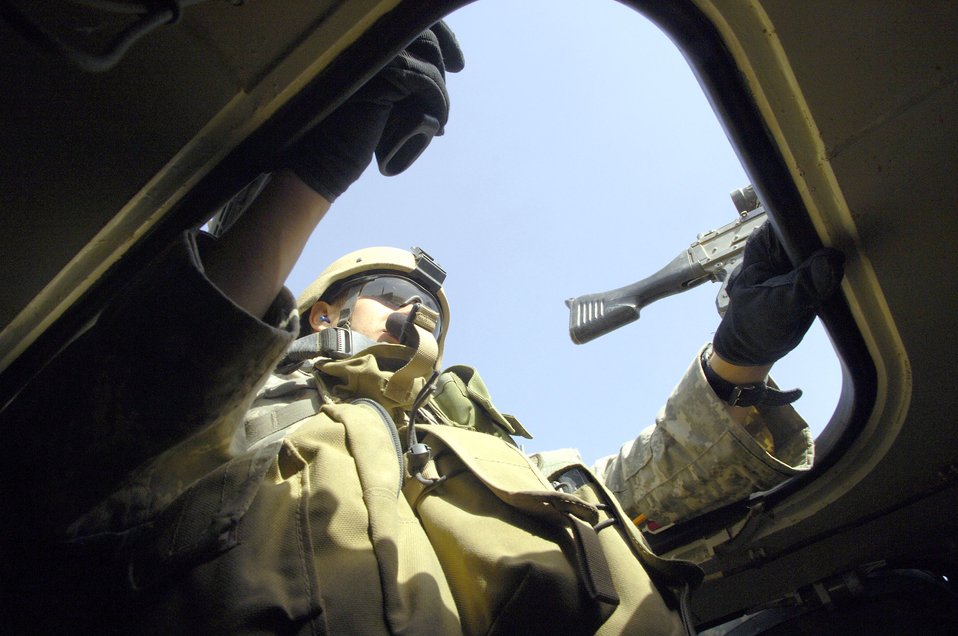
Stryker brigade combat team on patrol

Staff Sgt. Chris Pierce provides rear security in a Stryker vehicle while on patrol near Sinjar, Iraq on May 14, 2006. Sergeant Pierce is a joint tactical air controller assigned to a U.S. Army Stryker brigade combat team.